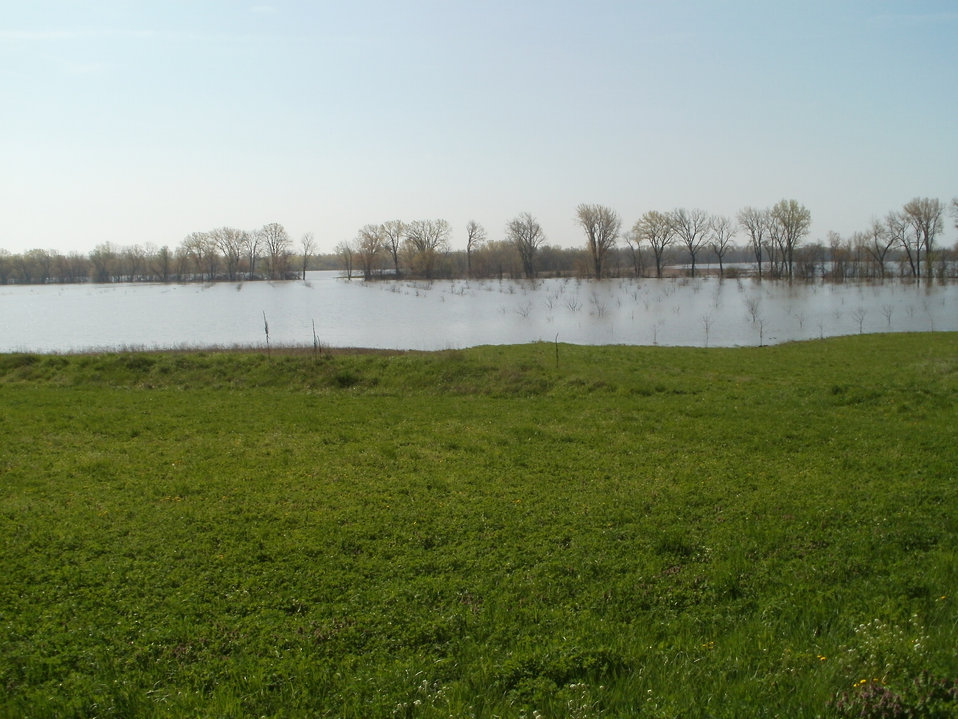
Retired schoolteacher and former U.S. Department of Agriculture (USDA) Farm Service Agency (FSA) County Committee Advisor Ellen R. Gust’s farm lies just South (downstream) of the LaGrange Lock and Dam in Section 32 of Cooperstown Township and in Sections 5 and 6 of Versailles Township in Brown County. IL on Apr. 27, 2013. All but 2 acres of the 271.5 acres of cropland on this farm are enrolled in the Conservation Reserve Program (CRP) with USDA FSA. Treetops that are visible above water are planted on a portion of the acreage to serve as a Riparian Forest Buffer as included in the CRP Conservation Plan of Operations. The remaining acreage is enrolled as wetland restoration and planted primarily to switch grass or other warm season grasses and includes some small shallow water areas. Most of this area is currently under water due to the flooding and can only be observed once the floodwaters recede. USDA photo Randy Tankersley.